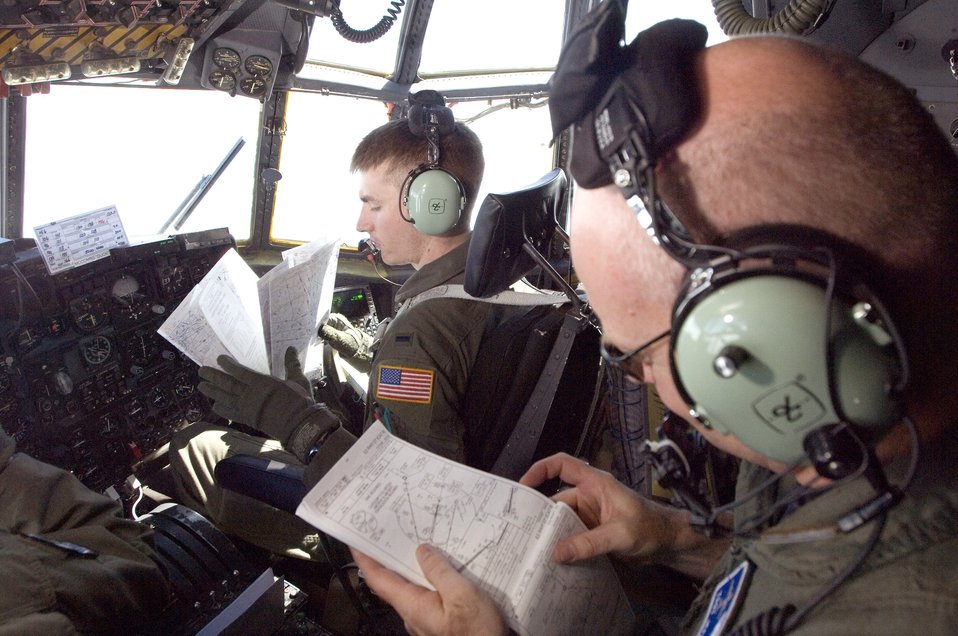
C-130 mission in Germany

First Lt. Tyler Robertson (left) and Tech. Sgt. Jeff McCombs review maps and diagrams while on a C-130 Hercules mission over Germany on Monday, June 5, 2006. The Airmen are with the 37th Airlift Squadron at Ramstein Air Base, Germany.